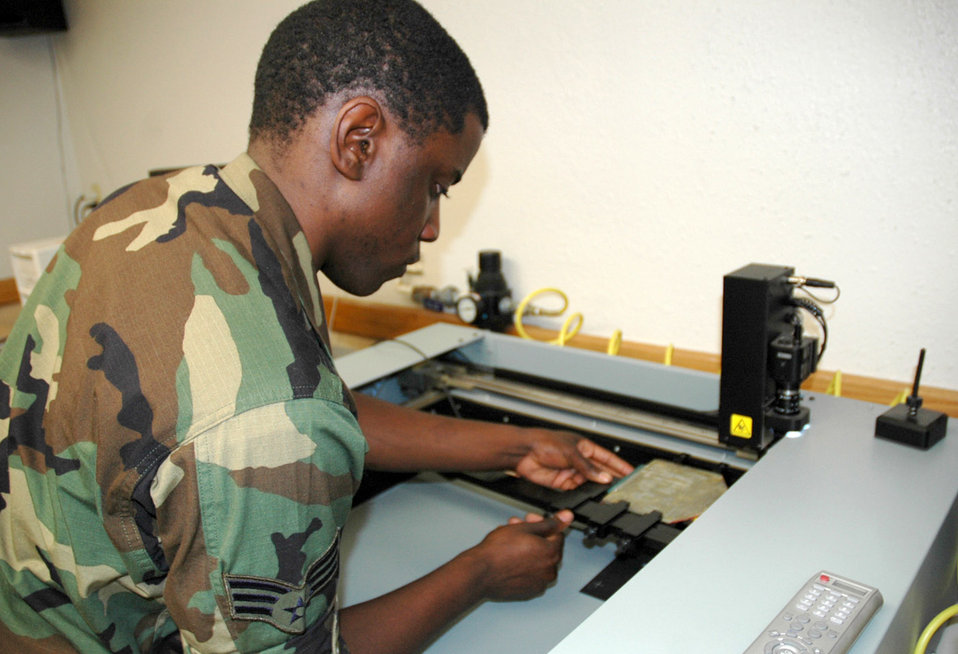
Maintenance wizards: 'We can fix anything'

Senior Airman Torry Murray aligns a malfunctioning circuit card assembly in a troubleshooting card reader July 17. Using a database that includes specifications for various circuit cards in use throughout the military, the machine runs diagnostic tests and reveals the cards' problems to the maintainer. Airman Murray is an Air Force Repair Enhancement Program technician in the 355th Maintenance Group at Davis-Monthan Air Force Base, Ariz.